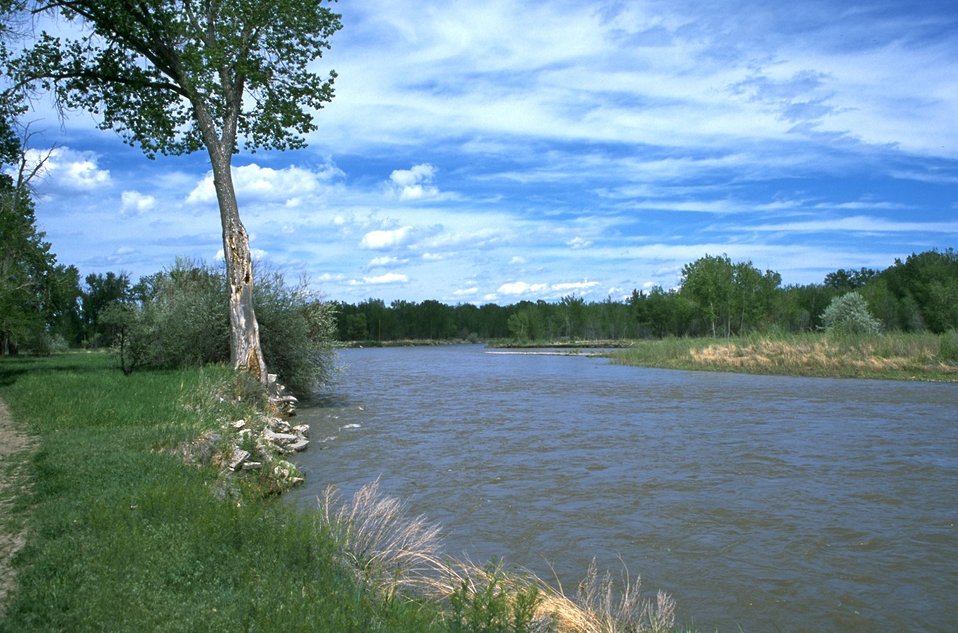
The Clark's Fork of the Yellowstone River flowing east